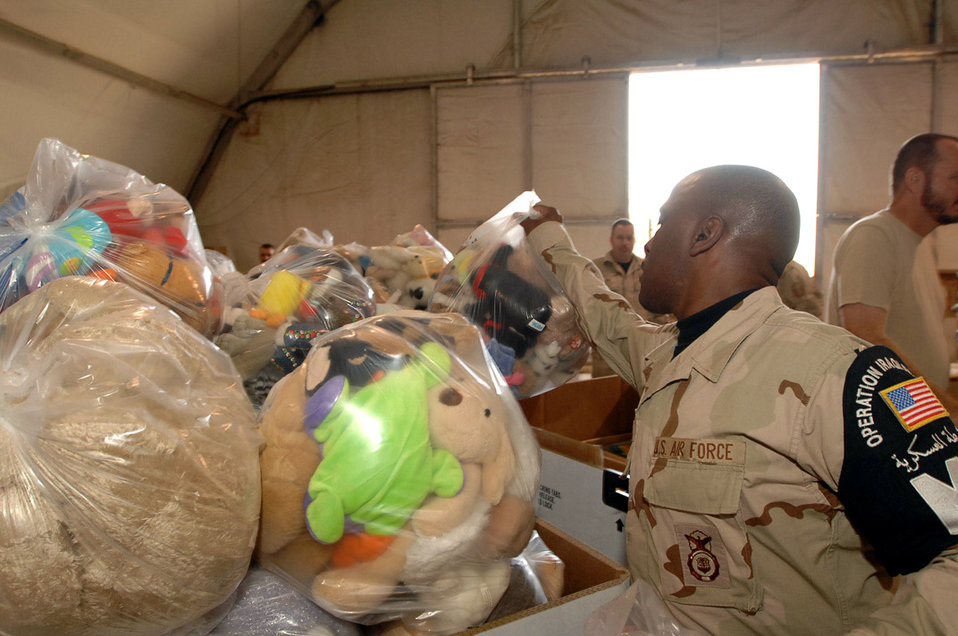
Iraqi Operation Child donations packed, ready

Tech. Sgt. Paul Wright tosses a bag of toys into a crate filled with even more toys at Ali Base, Iraq, Dec. 22. The donated items were collected by the 407th Air Expedtionary Airmen in support of Operation Iraqi Child. The donations will be given to Iraqi families in the An Nasiriyah area. Sergeant Wright is assigned to the 407th Expeditionary Provost Marshal Office and is deployed from Spangdahlem Air Base, Germany.